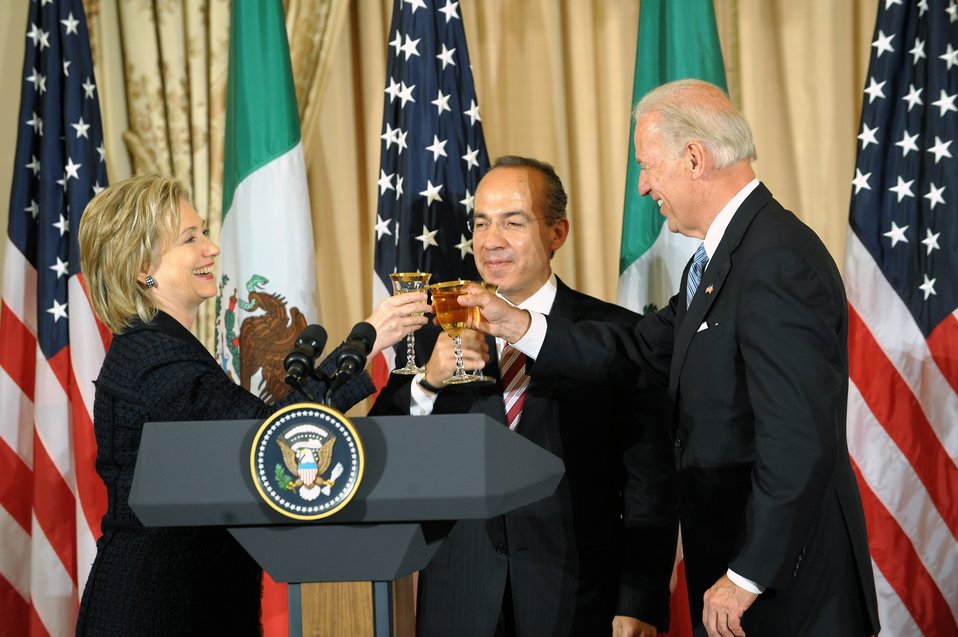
Secretary Clinton and Vice President Biden Co-Host Luncheon for Mexican President Calderon and Mrs. Zavala

U.S. Secretary of State Hillary Rodham Clinton, U.S. Vice President Biden, and Mexican President Felipe Calderon toast each other during the luncheon in honor of Mexican President Felipe Calderon Hinojosa and Mrs. Margarita Zavala in the Franklin Room at the U.S. Department of State, May 19, 2010.